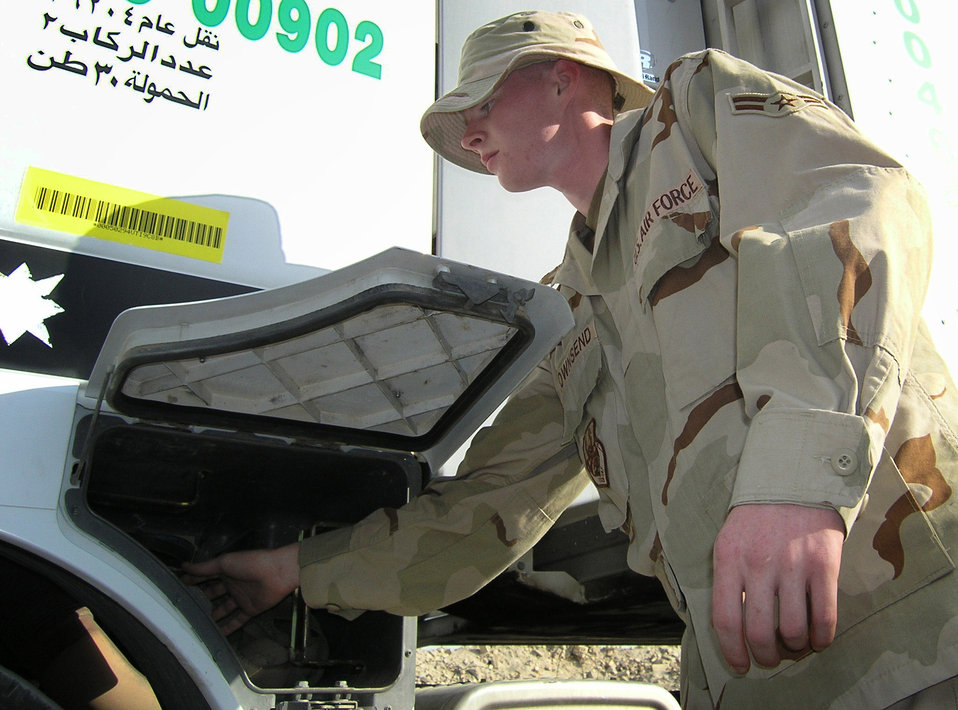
Volunteers help keep Airmen safe by searching vehicles

ALI BASE, Iraq -- Airman 1st Class Michael Townsend volunteers to search a vehicle at the 407th Expeditionary Security Forces Squadron's visitor control center here. The center's workers are the first line of defense against terrorist acts occurring here. Airman Townsend has volunteered three times to screen vehicles to protect the more than 9,000 U.S. servicemembers and coalition forces here. He is assigned to the 407th Expeditionary Operations Support Squadron and is deployed from Mountain Home Air Force Base, Idaho.